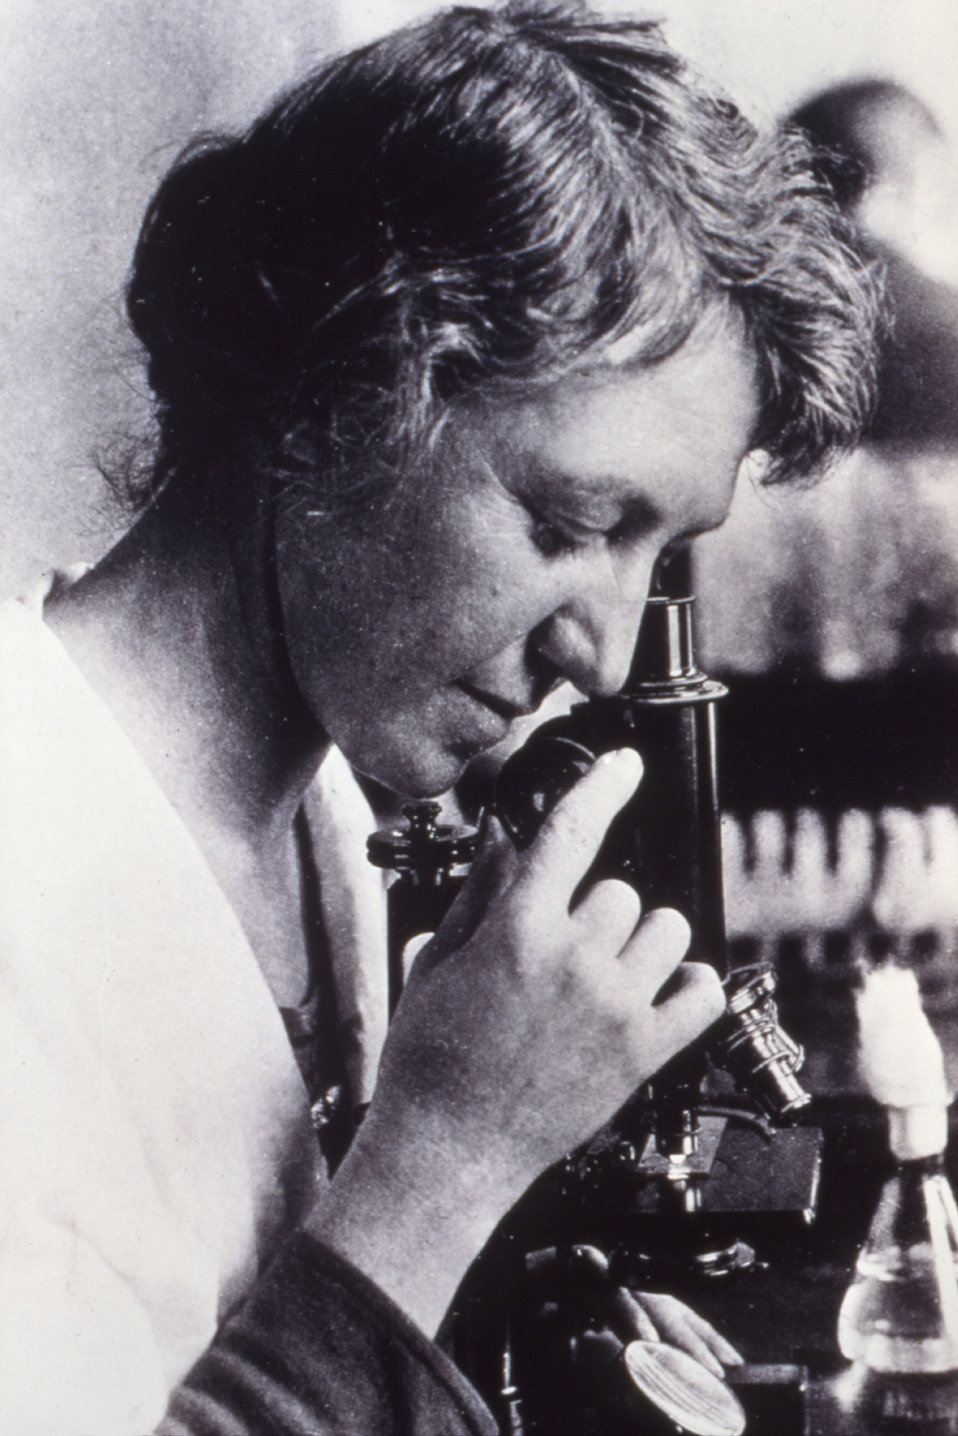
At her microscope, this historic image of bacteriologist Dr. Ida A. Bengston (1881-1952), was taken from the U.S. Public Health Service records.